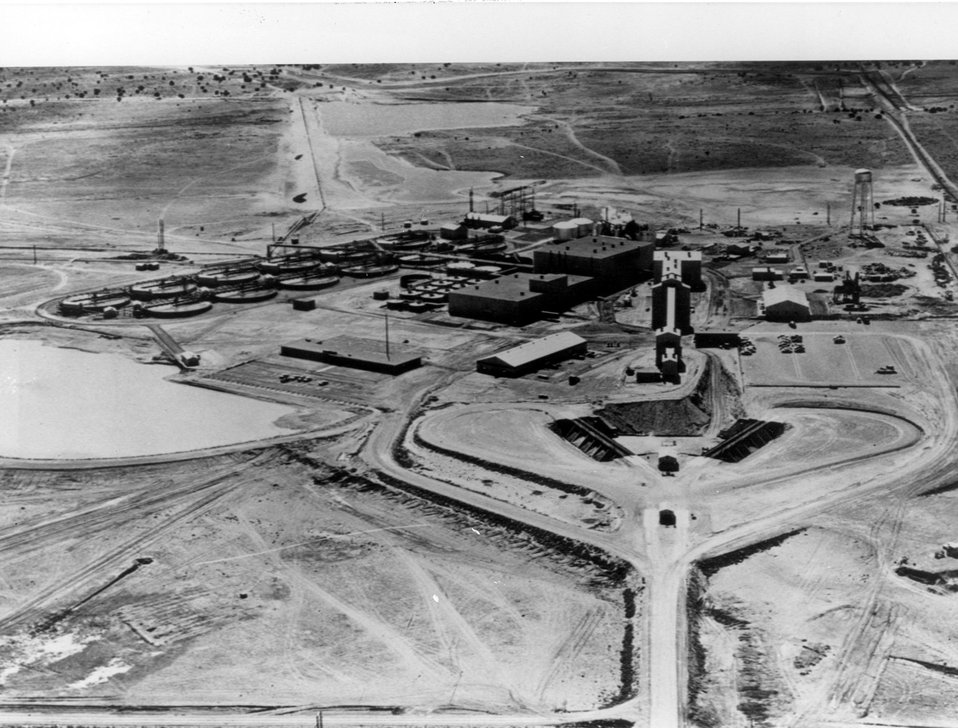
Shown is Kerr-McGee Corporation's uranium mill at Grants, New Mexico, the largest in the United States, with a capacity in excess of 5,000 tons of ore per day. c. 1969